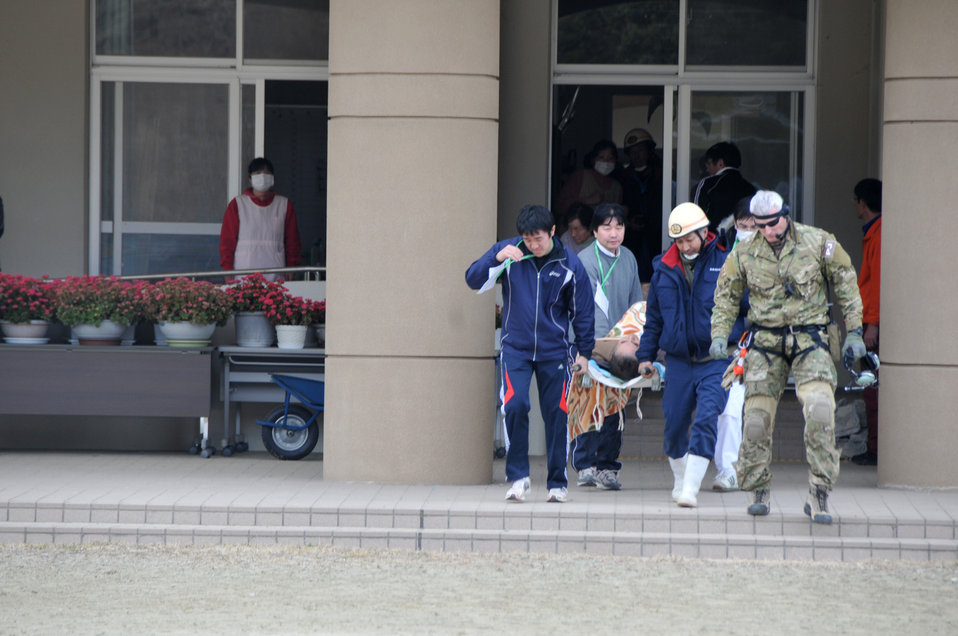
Search and rescue

Members of a Japanese disaster medical assistance team carry an earthquake victim to an awaiting HH-60G Pave Hawk helicopter March 14, 2011, at Sendai, Japan. The Japanese citizen was flown to a nearby hospital for treatment.